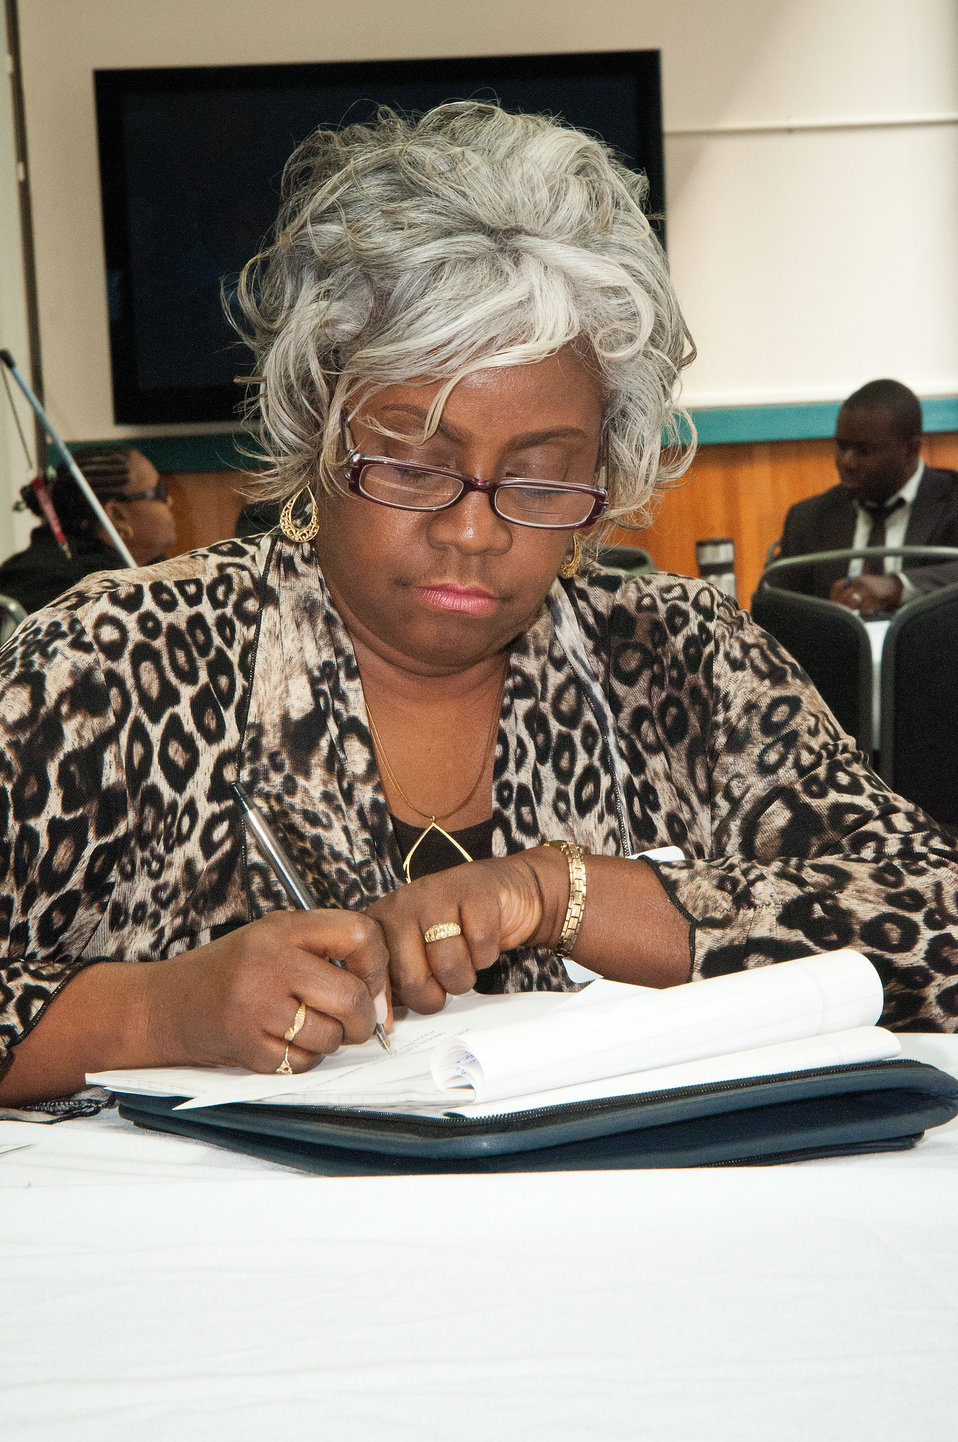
Loretta Gladden takes notes during a discussion on “Project Management” at the U.S. Department of Agriculture's (USDA) Office of Human Resources Management (OHRM) Virtual University’s Fall Flash Mentoring Event at USDA in Washington, D.C. on Thursday, Sept. 6, 2012.